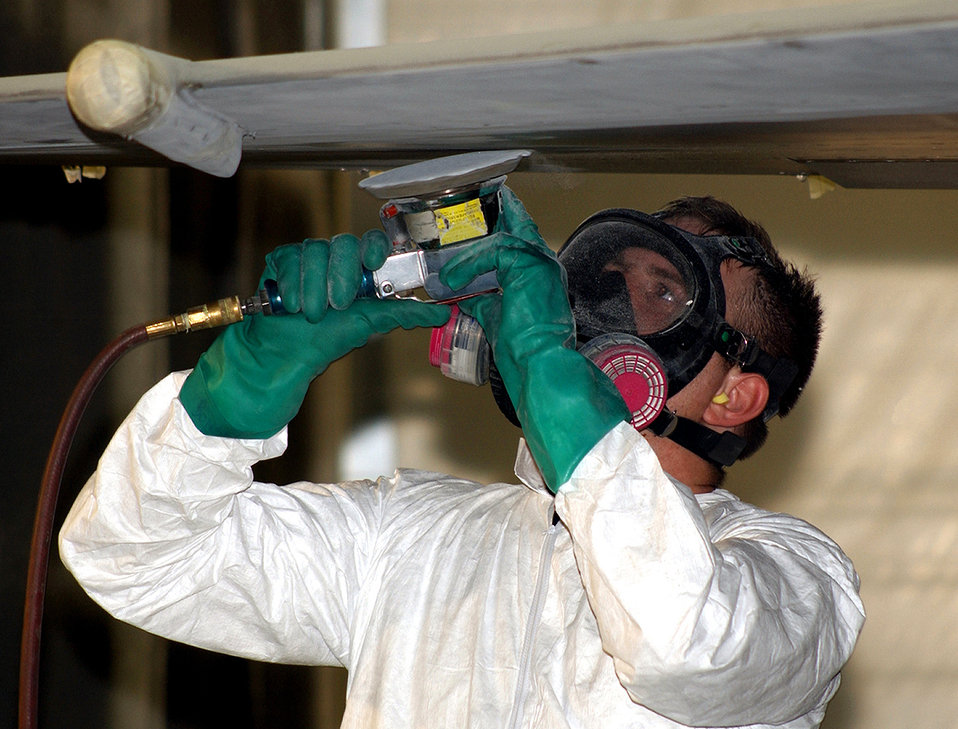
Sand man

KUNSAN AIR BASE, South Korea -- Senior Airman Bob McKenzie sands the underside of an F-16 Fighting Falcon's wing to prepare it for painting. McKenzie is a corrosion-control aircraft structural maintenance journeyman assigned to the 8th Maintenance Squadron here.